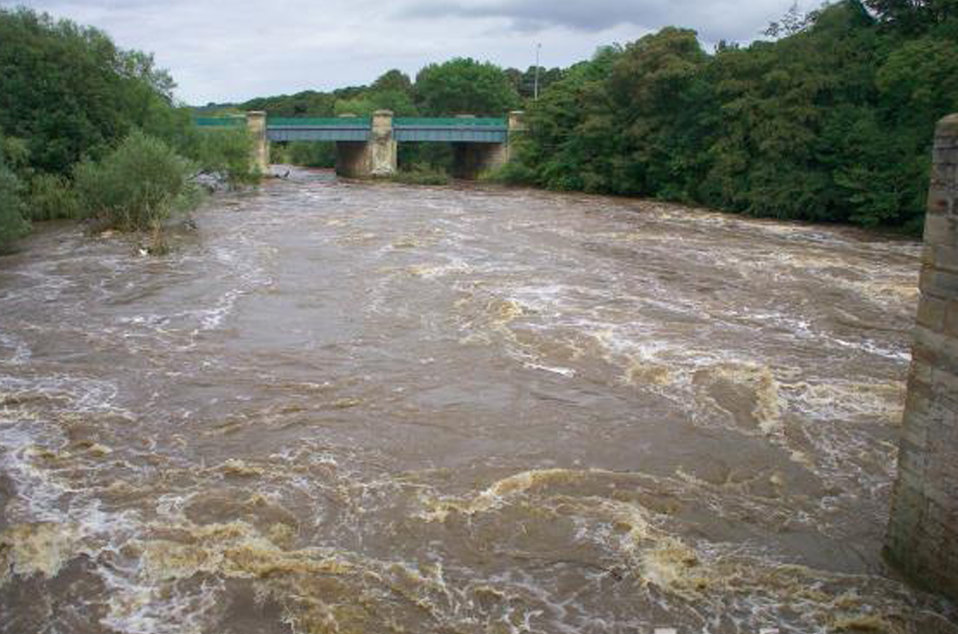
Arkansas Flood Photo of a Water Under the Bridge